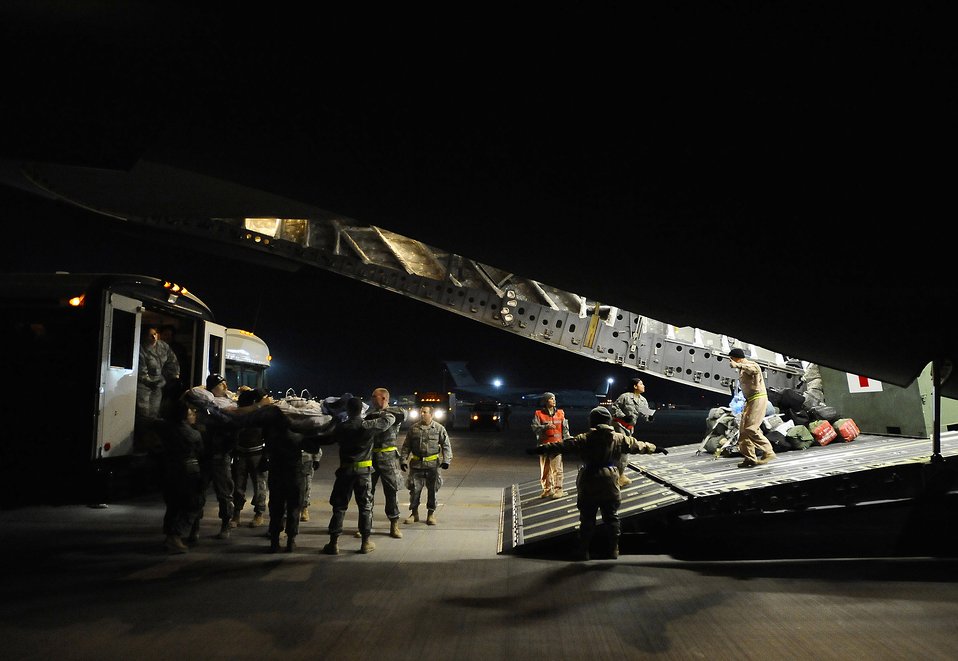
A wounded warrior heads home

Airmen carefully lower a patient from an ambulance Nov. 27 at Joint Base Balad, Iraq. Patients are loaded onto aircraft before being aeromedically evacuated out of Iraq. In 2008, more than 7,500 patients have been transported from the contingency aeromedical staging facility in 650 missions.